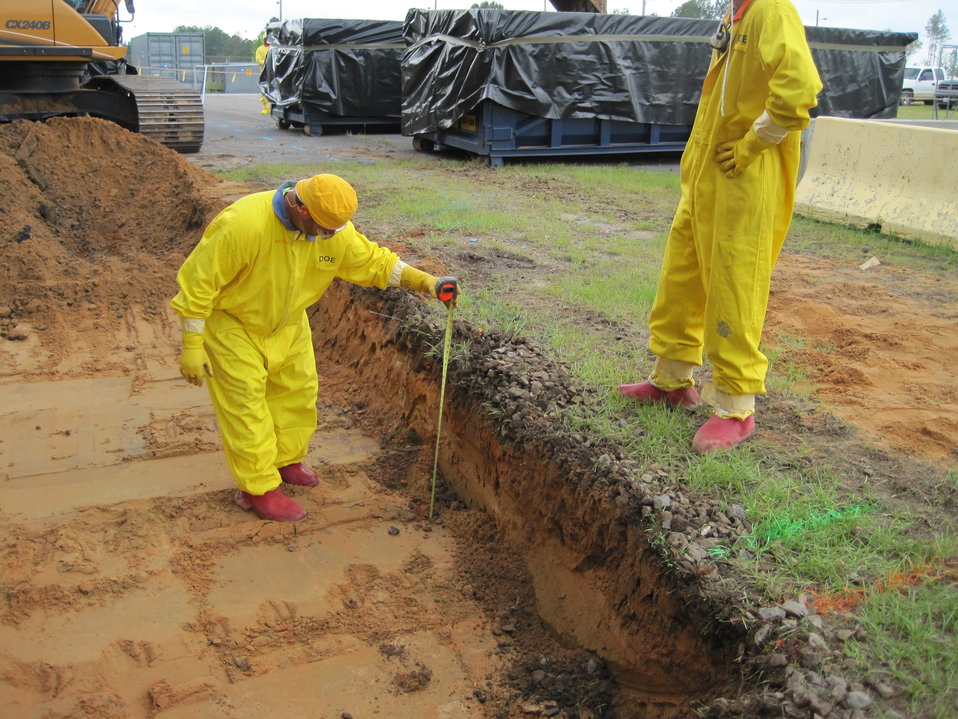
Workers Clean Up C Area as Added Value from Recovery Act P and R Reactor Projects

The Savannah River Site is using Recovery Act funds to remediate C Area, home to one of five former nuclear reactors at the site.